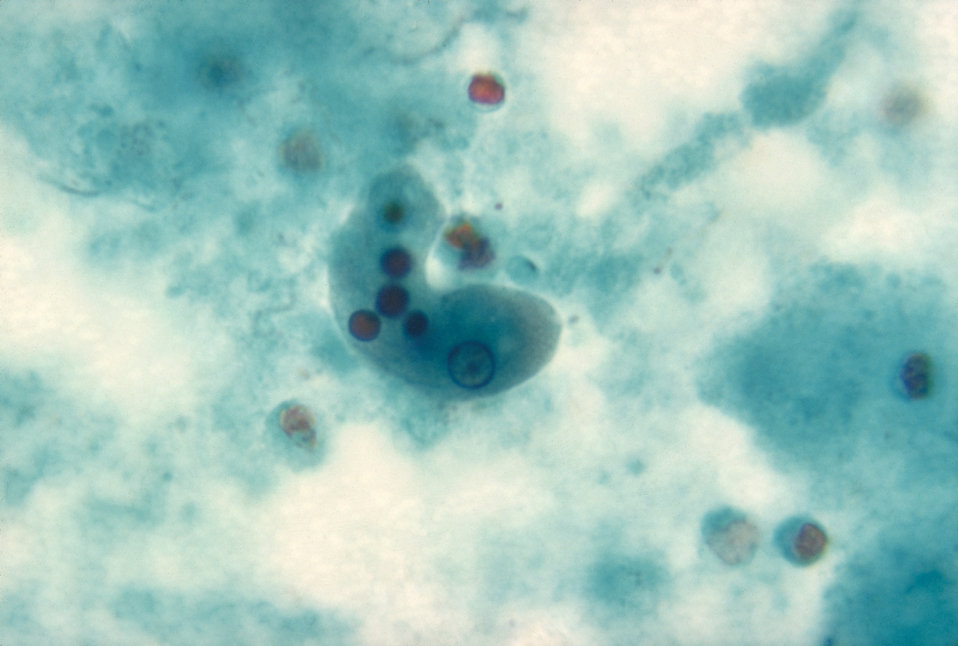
This micrograph revealed a trophozoite of an Entamoeba histolytica protozoan parasite.